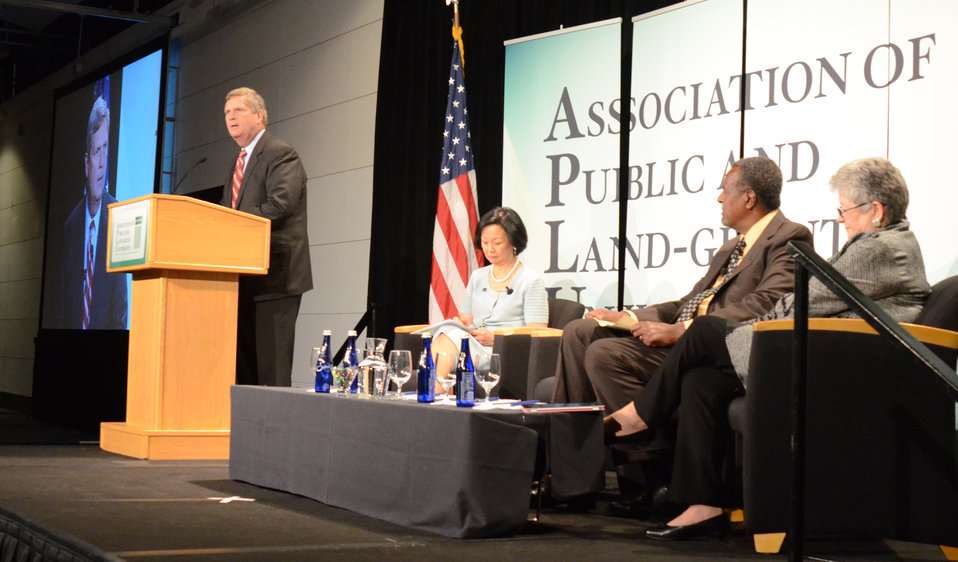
Agriculture Secretary Tom Vilsack speaks at the Association of Land-Grant Universities (APLU) 150th Year Anniversary of the Morrill Act: Advancing the Legacy at the Ronald Reagan Building and International Trade Center in Washington D.C. on Tuesday, June 26, 2012.